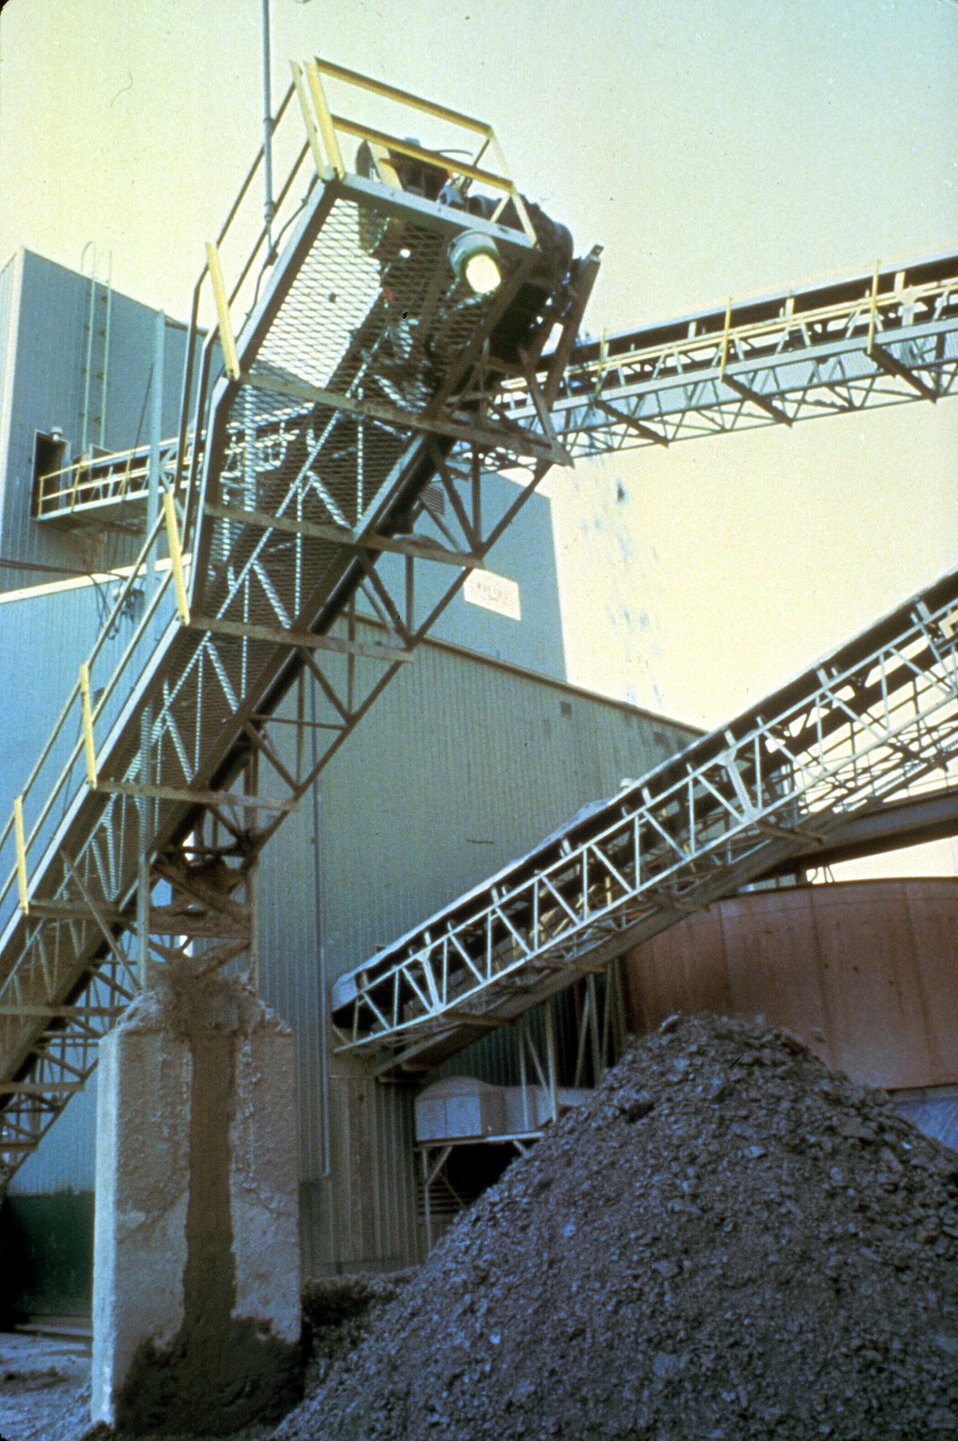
Swartzwalder Uranium Mine. c. undated